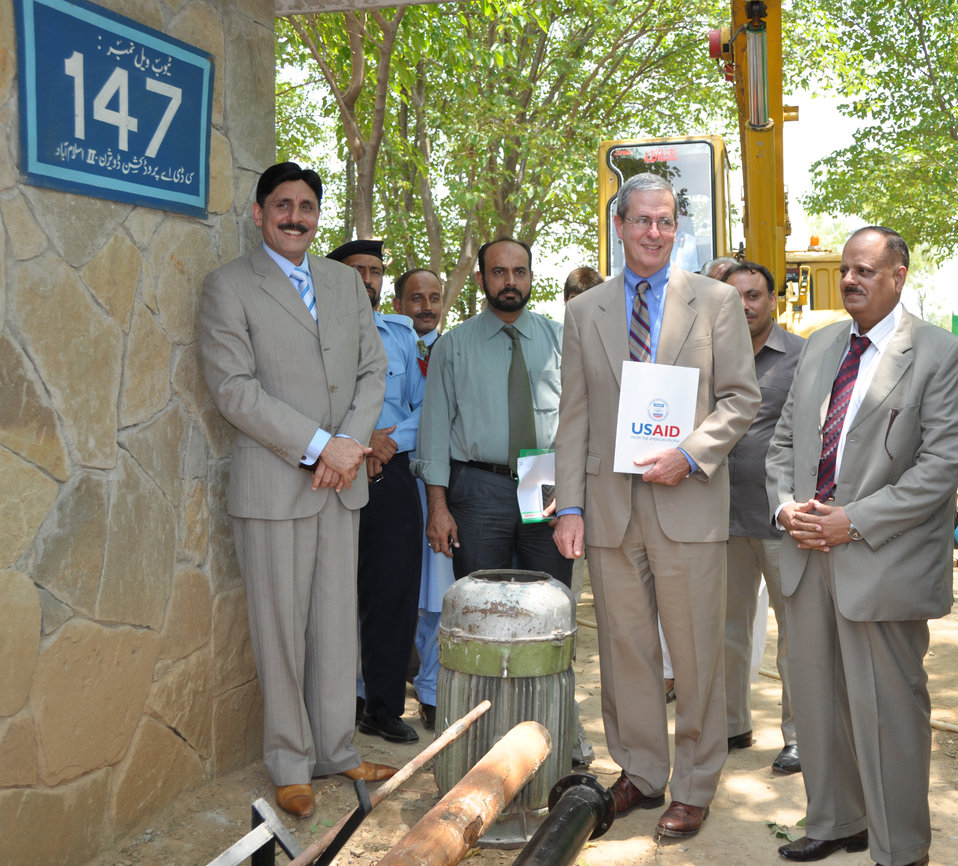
USAID funds replacement of 187 CDA Tubewell Pumps

Islamabad, July 17, 2012 - USAID Country Director Jonathan M. Conly and CDA Chairman Farkhand standing next to an old tubewell pump that was replaced by a more energy efficient model at Fatima Jinnah Park. USAID will replace all 187 tubewell pumps owned by the Capital Development Authority (CDA) in order to improve water supply for Islamabad, reduce energy consumption, and decrease the electricity bills for CDA.